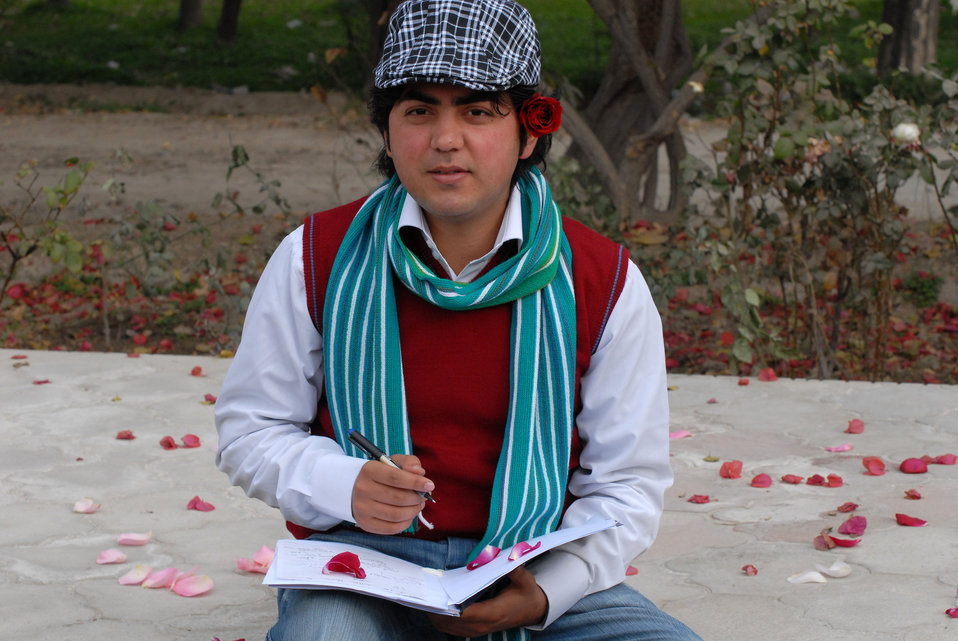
'On the Road' in Nangarhar Province